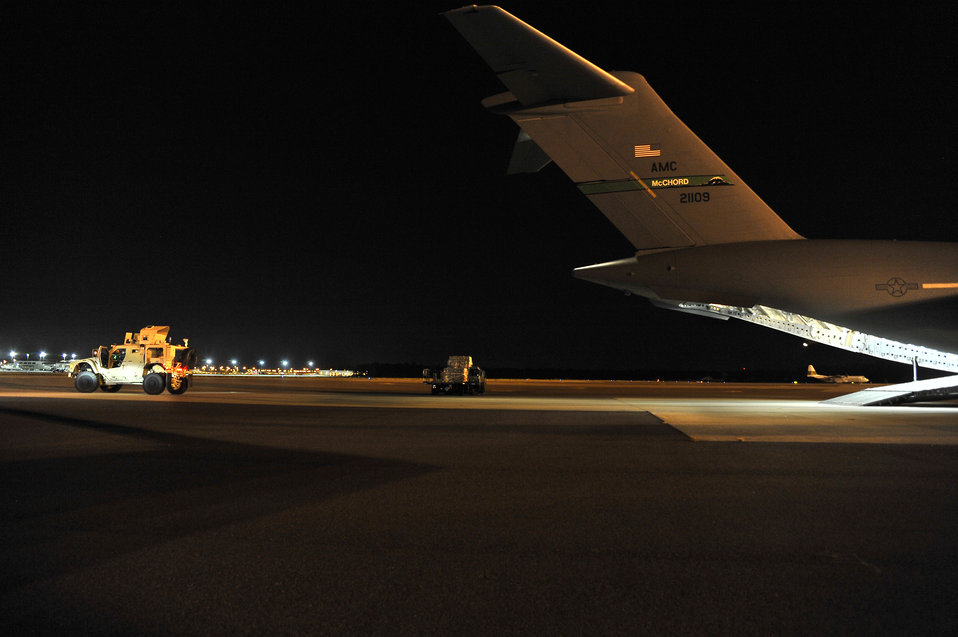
MATV load C-17

One of two mine-resistant, ambush-protected all-terrain vehicles, or M-ATVs, waits to be loaded onto a C-17 Globemaster III at Charleston Air Force Base, S.C., Sept. 30, 2009. The two M-ATVs are the first to be delivered to the Afghanistan theater for operational use. The C-17 is based out of McChord AFB, Wash.